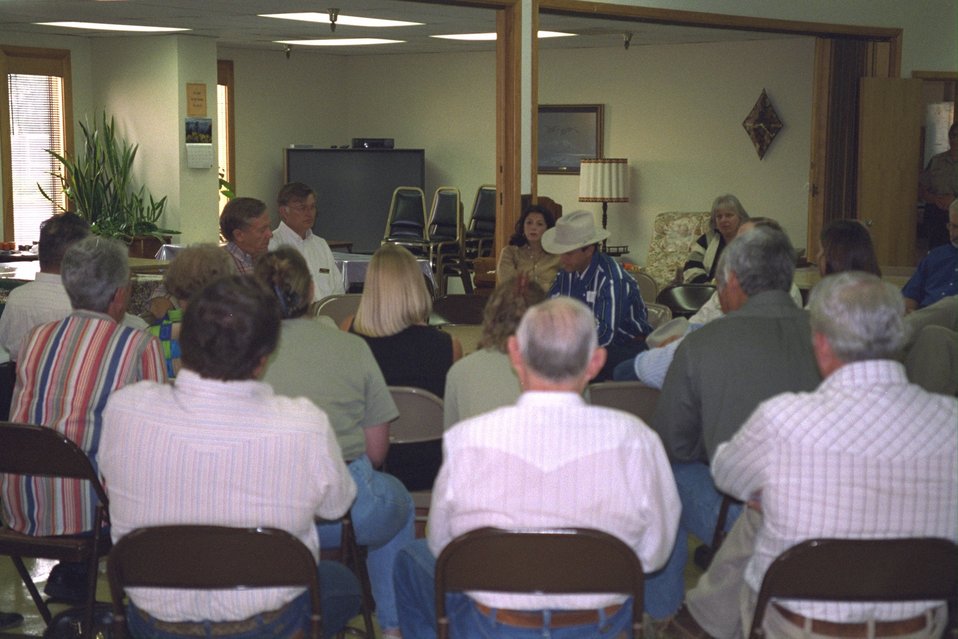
Town meeting to discuss Steens designation with Secretary Babbitt in Burns, OR.